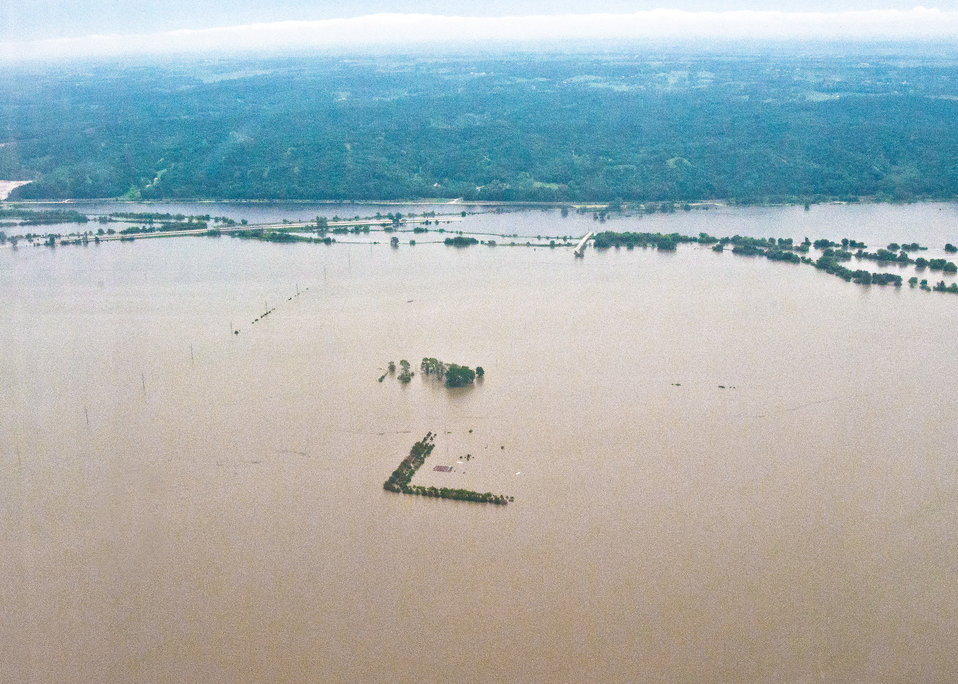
The Missouri river flooded hundreds of acres in Nebraska and Iowa. Agriculture Secretary Tom Vilsack visited the area on Friday, June 17, 2011, and spoke to agriculture producers and community leaders. The goal of the meetings was to get a firsthand look and provide that information back to Washington necessary to better deliver disaster programs expeditiously to effectively respond to this disaster. The United States Department of Agriculture agencies have programs to assist producers as they assess recovery efforts to assist with recovery in rural areas reeling from a natural disaster. USDA and the entire federal family have been working with state and local officials to provide relief to residents, farmers, ranchers and businesses.